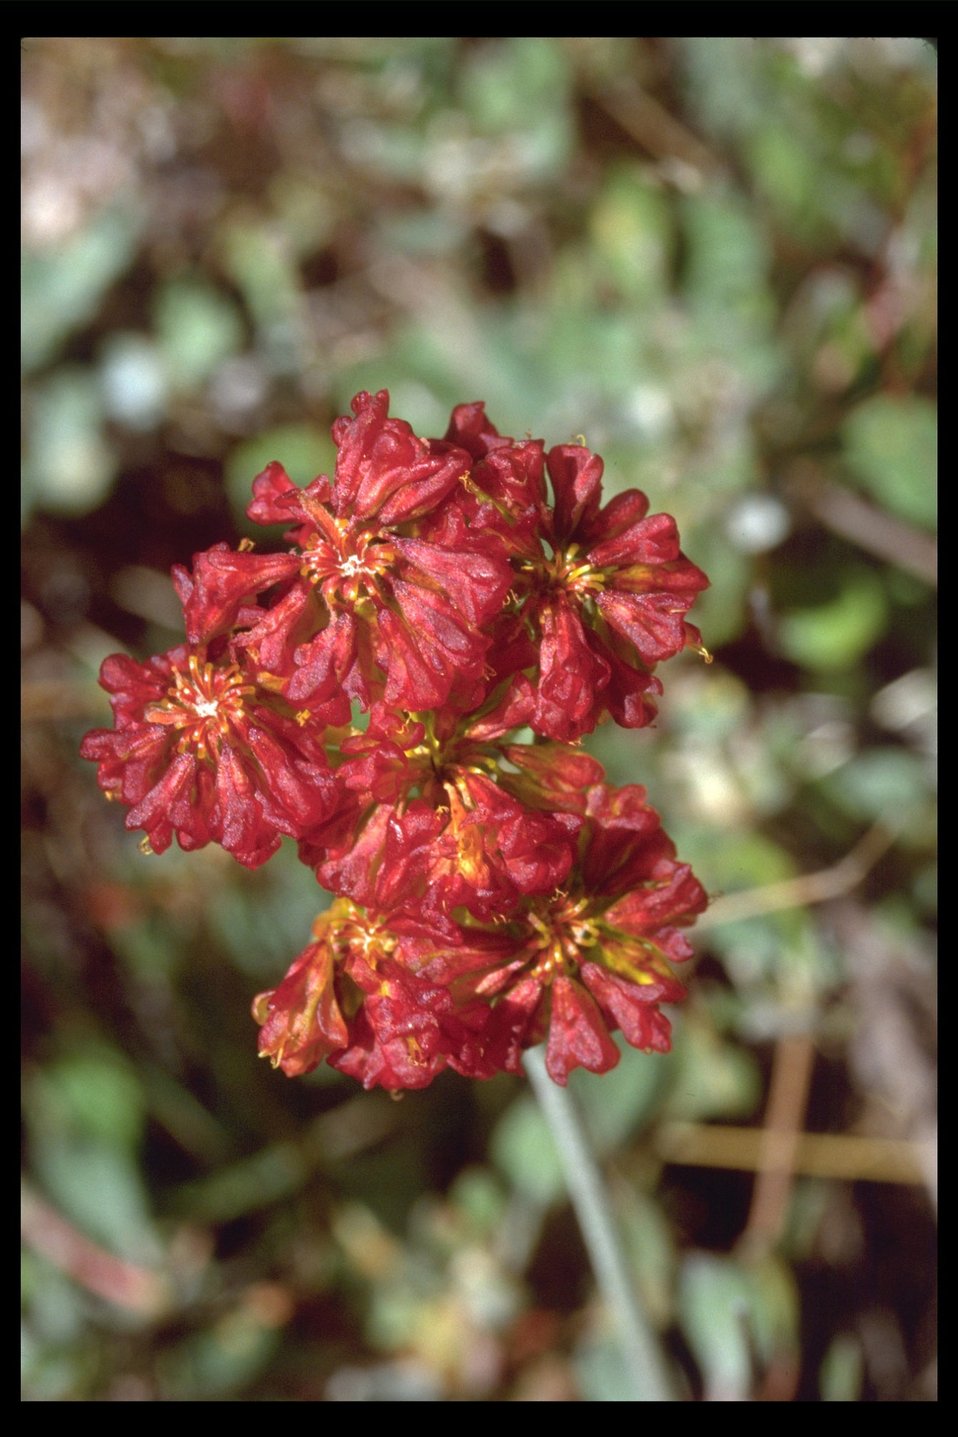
Unknown succulent flower at Upper Trail.